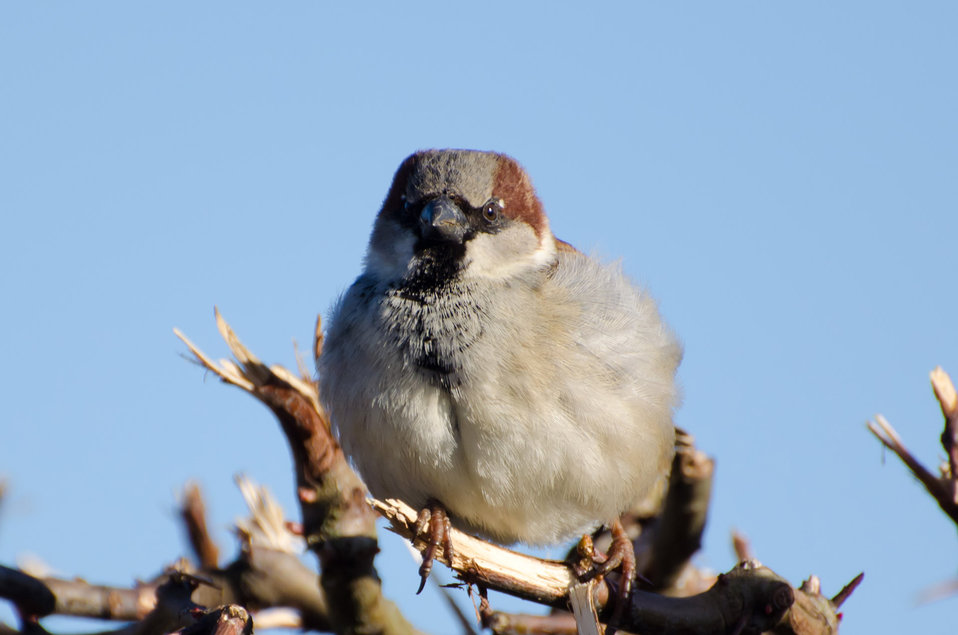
Bird

Birds on the branch.